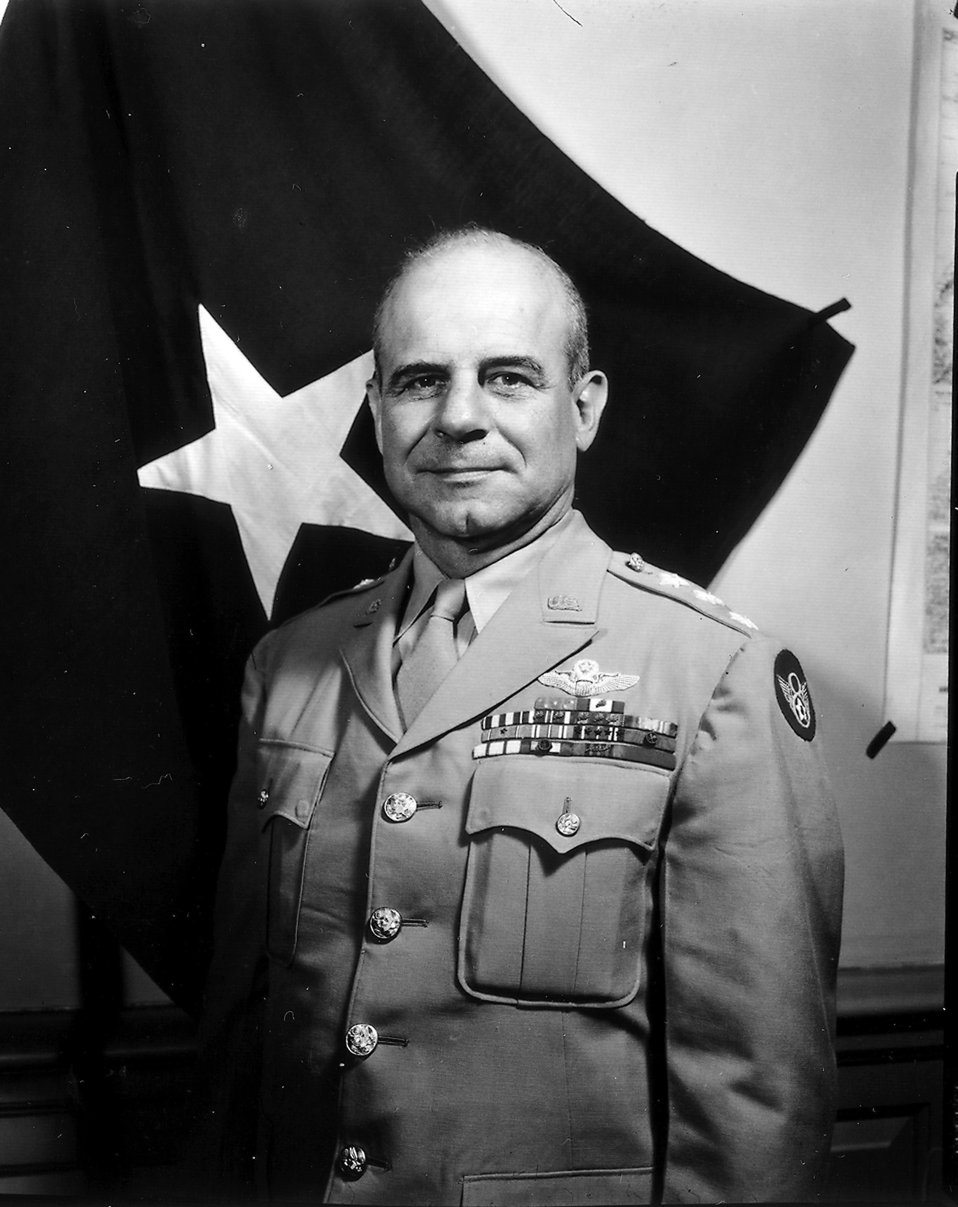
Jimmy Doolittle

Brig. Gen. Jimmy Doolittle